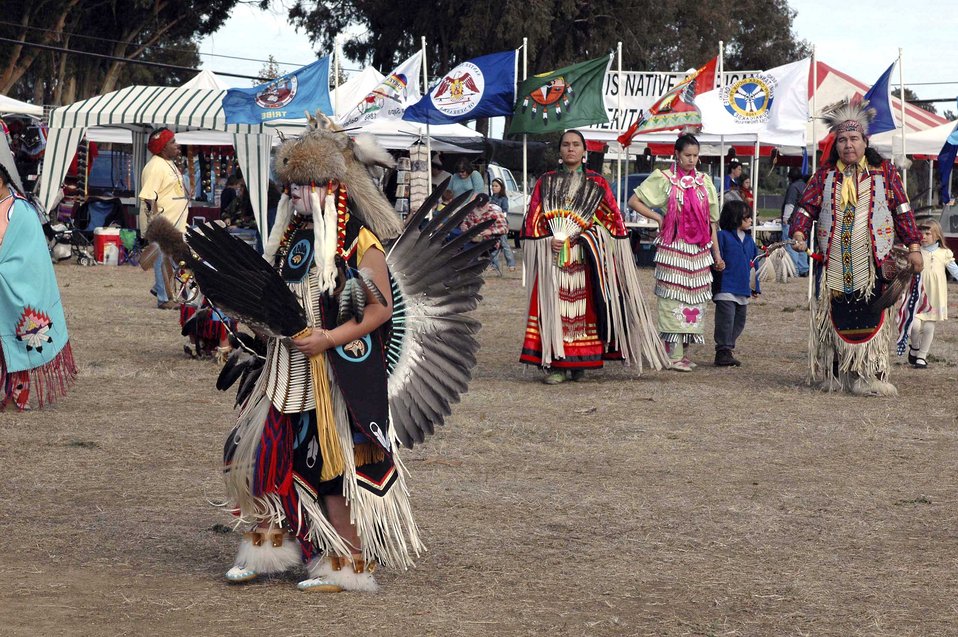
Powwow

TRAVIS AIR FORCE BASE, Calif. (AFPN) -- Native Americans participate in a traditional dance during the fourth annual Veterans Pow Wow here. About 20 separate Native American nations were represented in the two-day event Nov. 5 and 6.